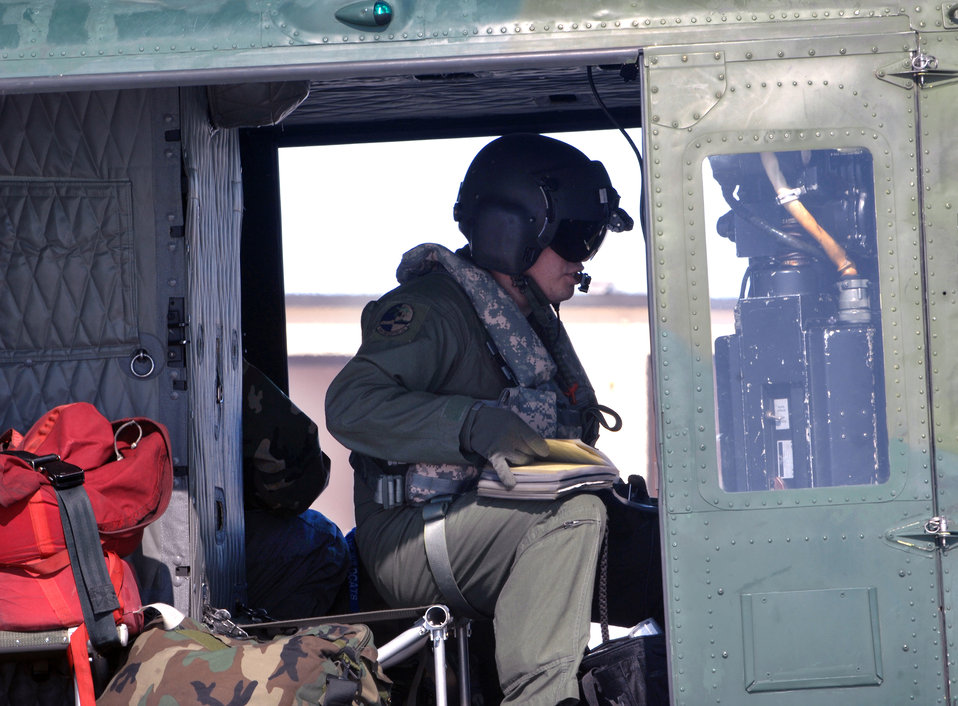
Minot Airmen continue North Dakota flood support

A UH-1N Huey helicopter returned to Minot Air Force Base, N.D., March 27 for a crew swap before heading to Grand Forks AFB, N.D., to assist in flood relief efforts in the Fargo area of North Dakota. Two hoist-equipped UH-1Ns from the 91st Missile Wing from Minot AFB are part of an interagency task force providing search and rescue and support services in flood-affected areas of North Dakota.